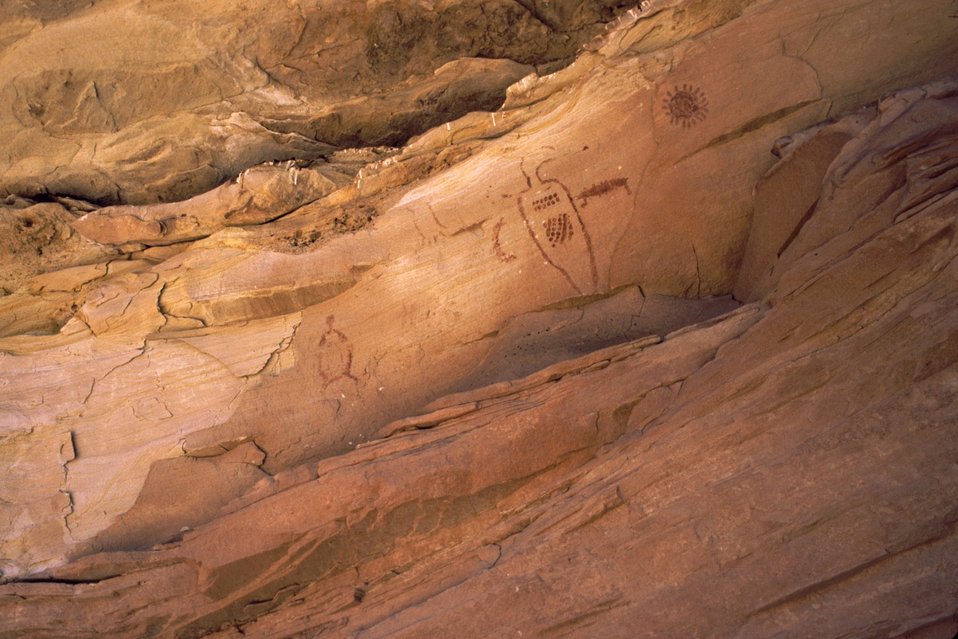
Picto Graphs McDonald Creek